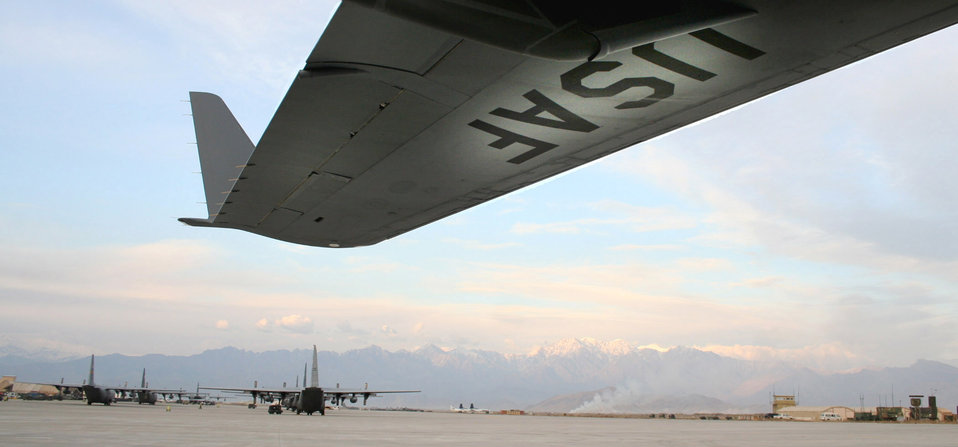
C-17 crews deliver in Central Asia

A fleet of C-17 Globemaster IIIs wait on the runway at Bagram Air Base, Afghanistan, to shuttle supplies and troops where they're needed in the region.